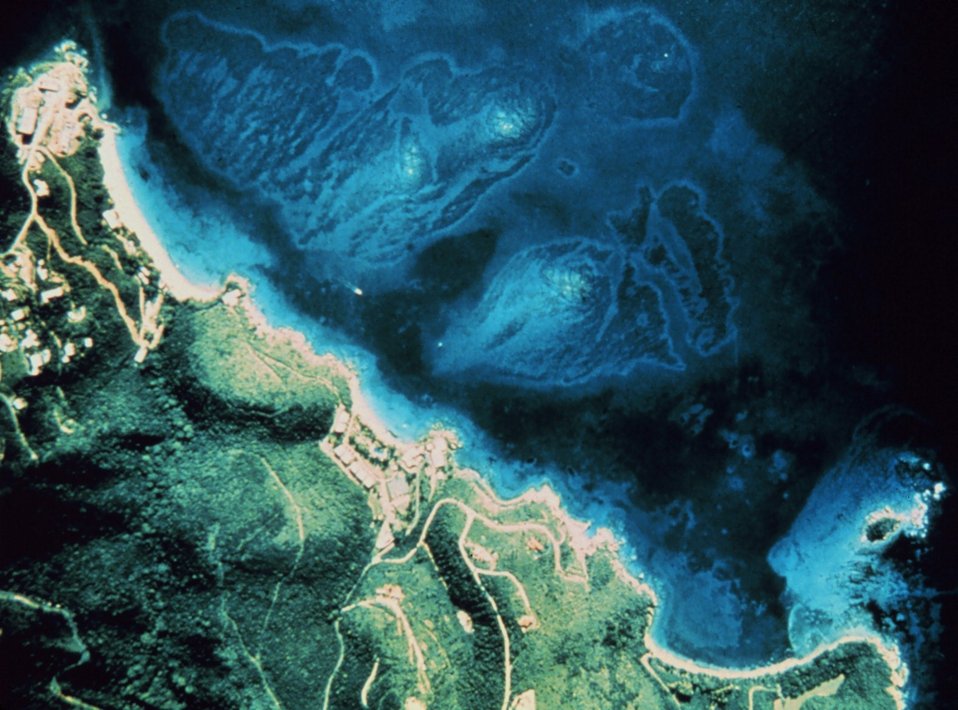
An aerial view of a segment of Virgin Islands coastline